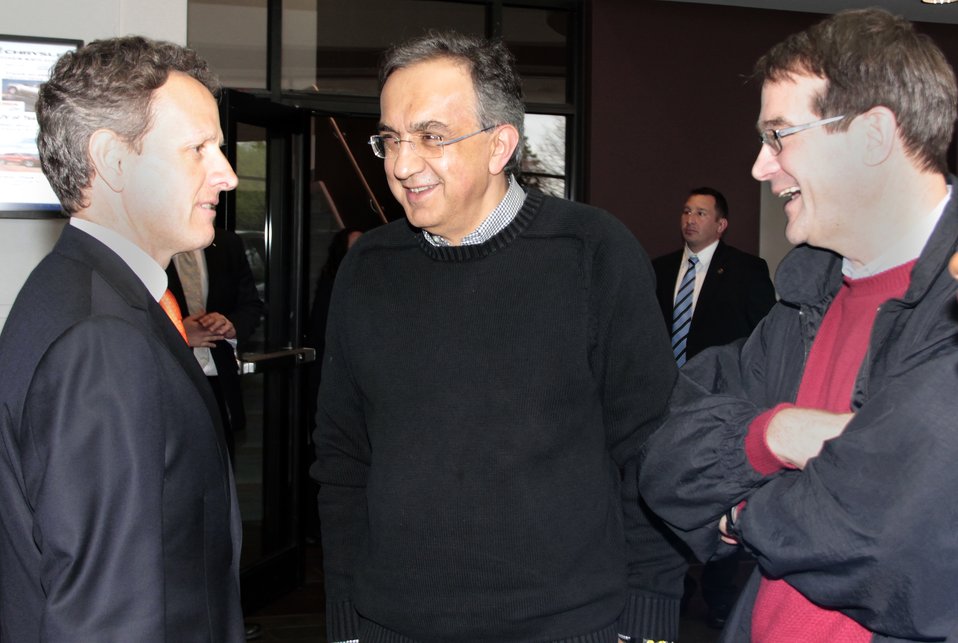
Secretary Geithner Visits Detroit

Secretary Geithner greeted by Chrysler Group CEO Sergio Marchionne and UAW President Bob King.